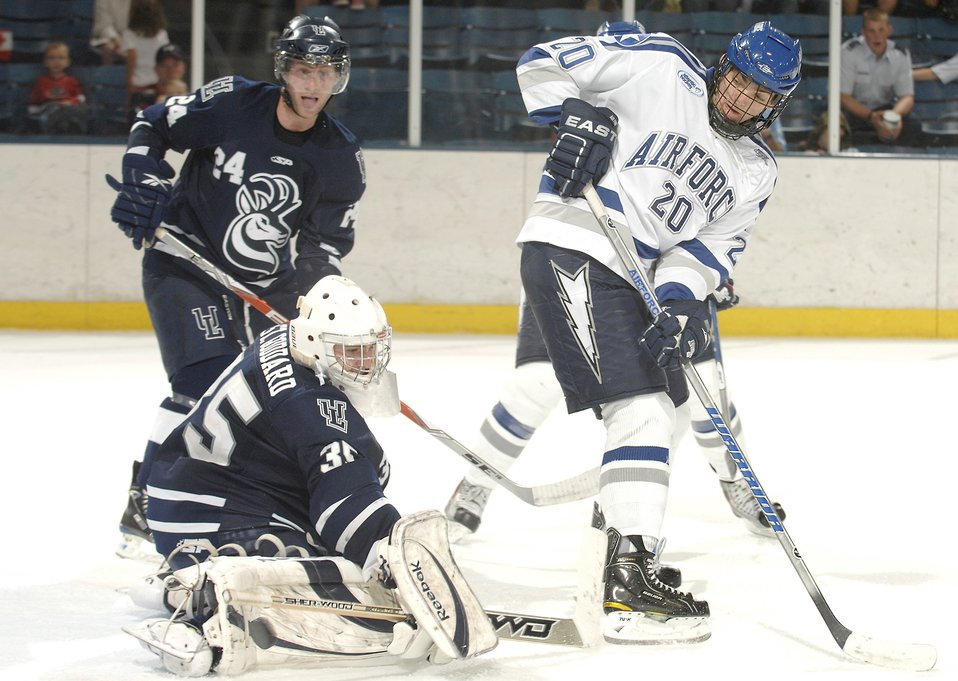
Falcons defeat the Pronghorns

Air Force freshman Tony Thomas attempts a back-hander in front of the goal during a hockey exhibition game against the University of Lethbridge from Alberta, Canada, Oct. 4, 2010, at the U.S. Air Force Academy's Cadet Ice Arena, in Colorado Springs, Colo. Air Force defeated the Pronghorns 4-3 in overtime.